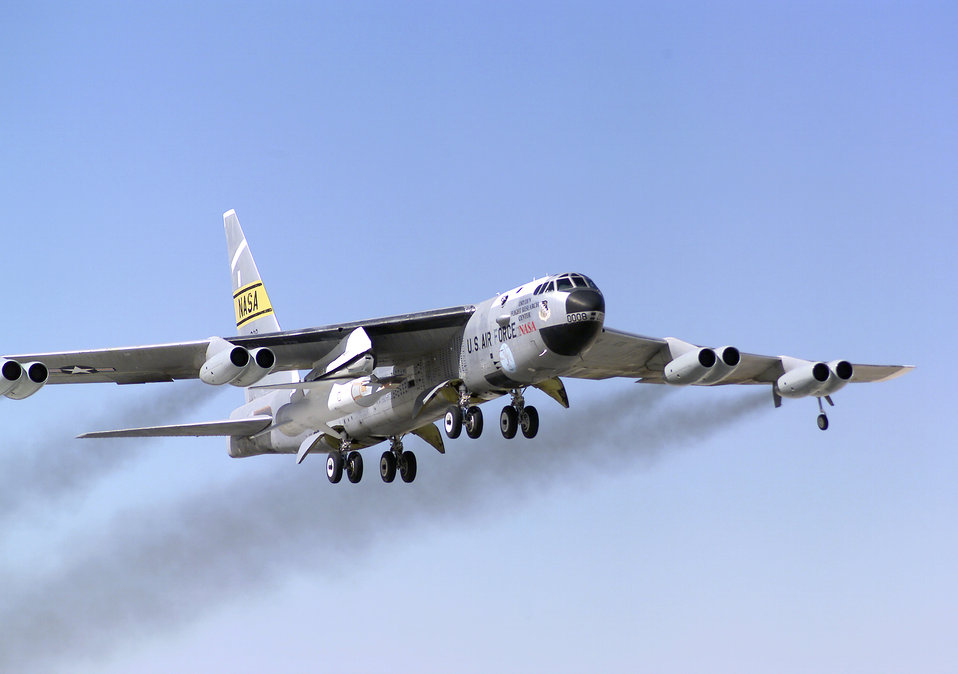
'Mothership' retires

OVER EDWARDS AIR FORCE BASE, Calif. -- NASA's B-52B launch aircraft takes off carrying an X-43A hypersonic research aircraft on an evaluation flight Sept. 27. The B-52, the oldest still flying, was officially retired from service during a ceremony at Edwards Air Force Base Dec. 17.